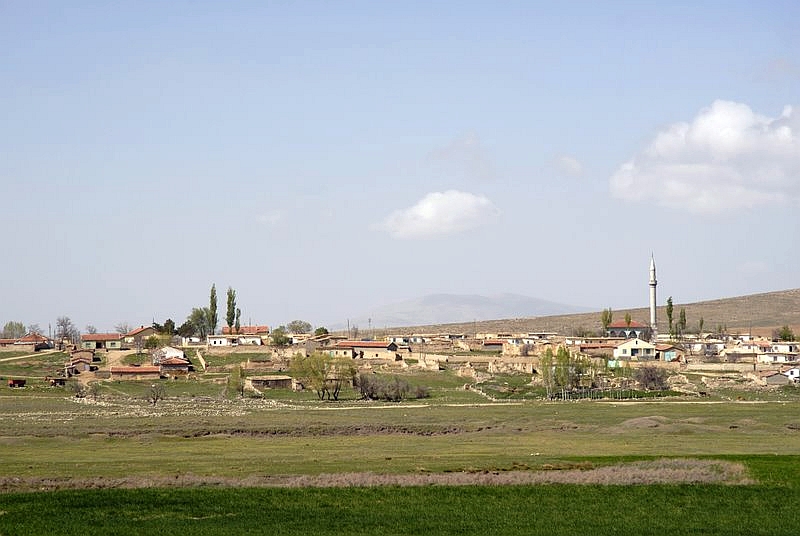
General view of Hacıfakılı, Yunak. Türkçe: Hacıfakılı, Yunak'ın genel görünümü.